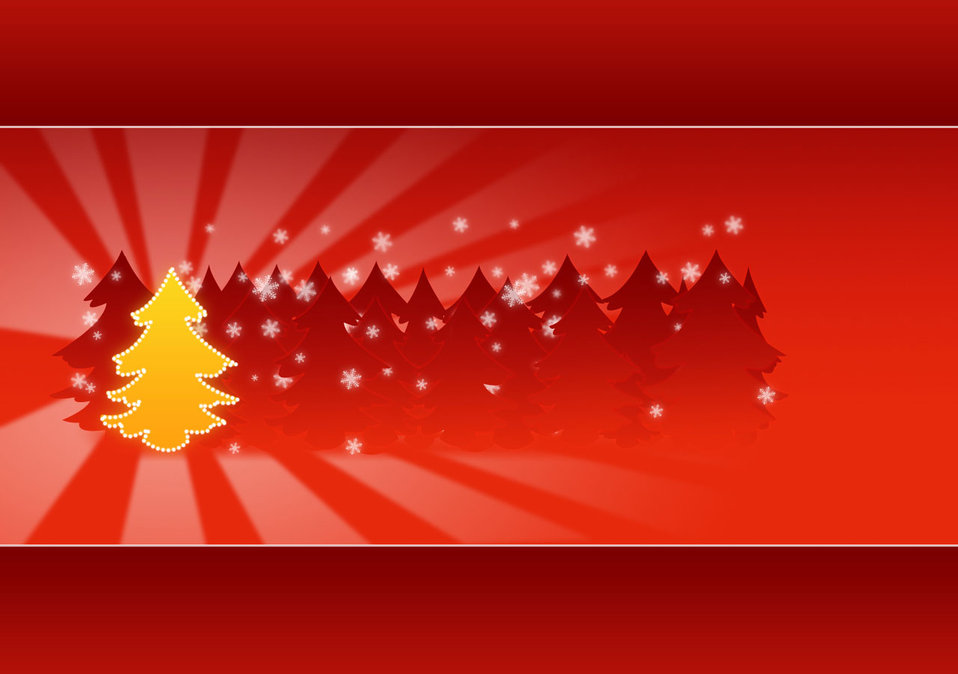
Christmas tree

Yellow christmas tree in the wood.